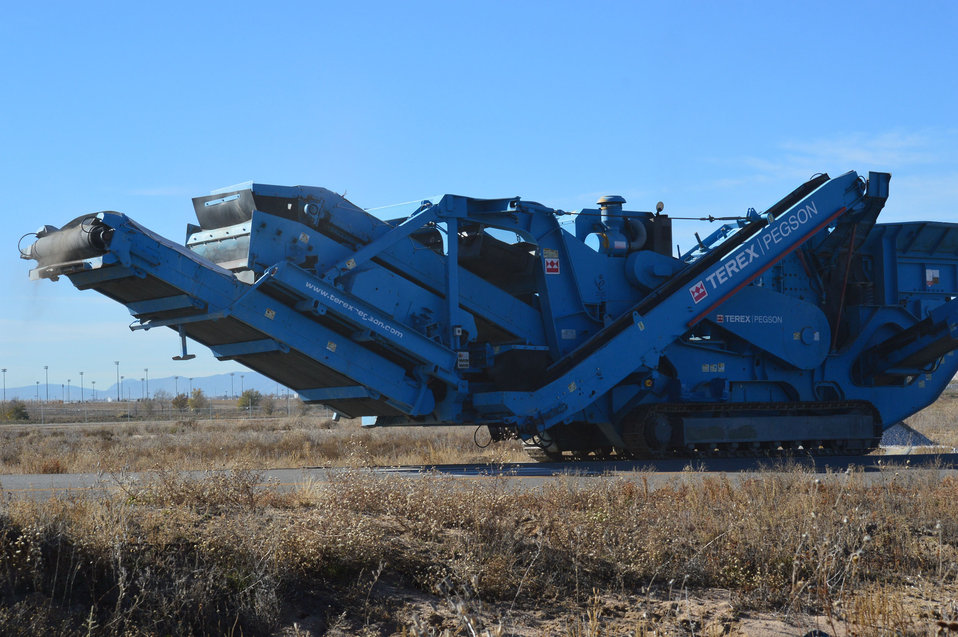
The Crusher Has Arrived!